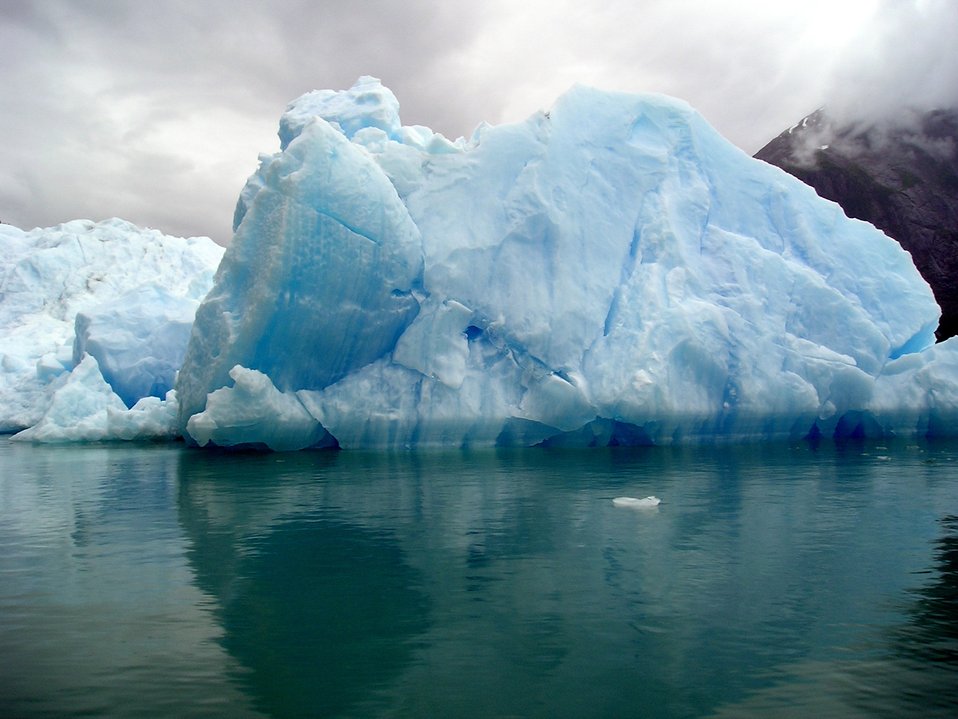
An iceberg in Tracy Arm